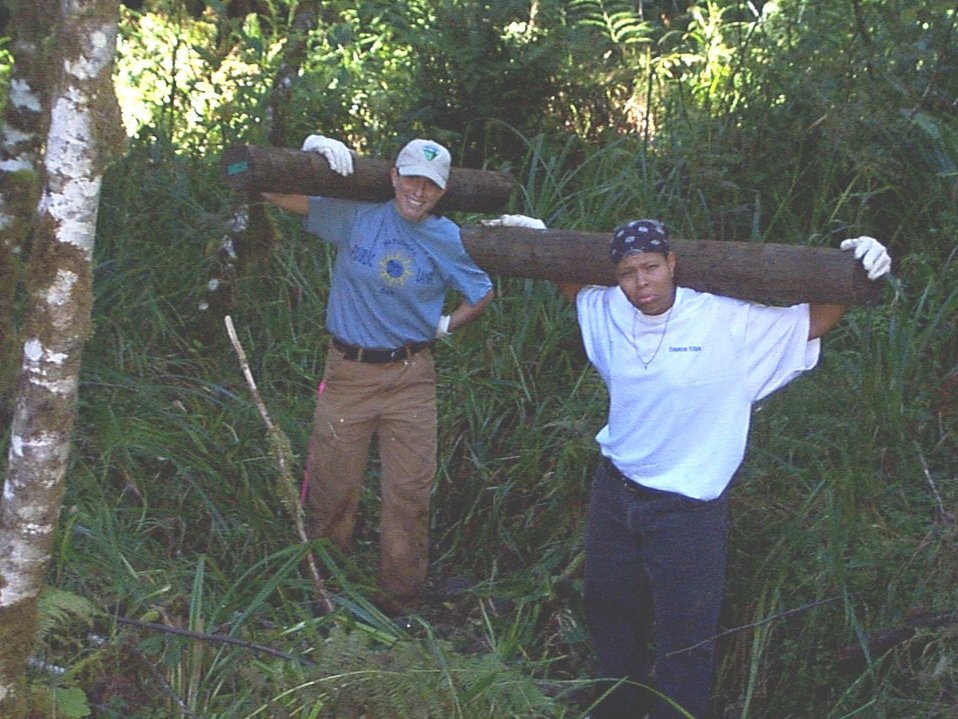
Volunteer installs interpetive sign at McGowen Creek, McKenzie RA.